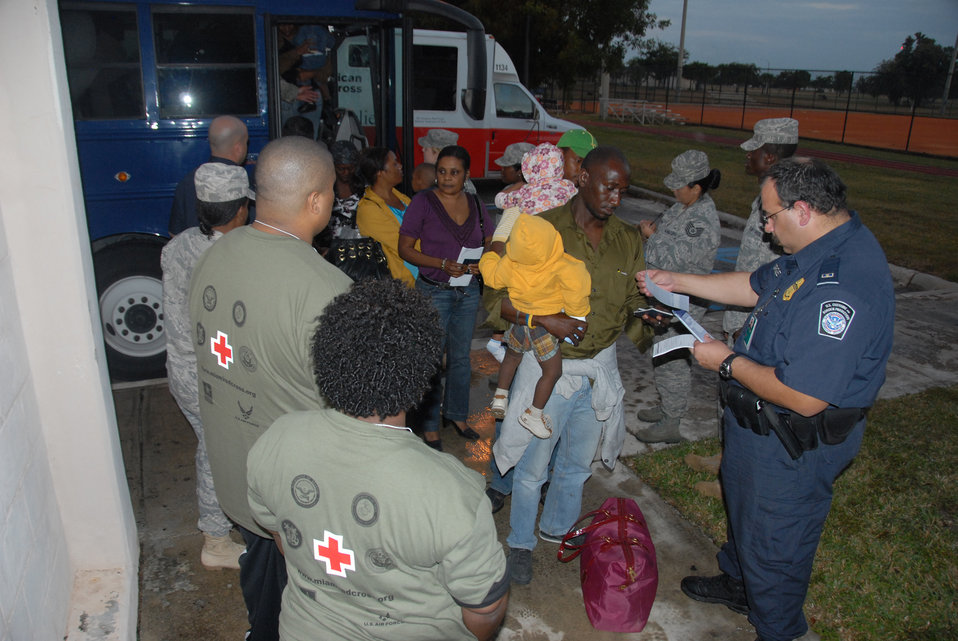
Haiti relief

Evacuees from Haiti begin evacuation in-processing at Homestead Air Reserve Base, Fla., Jan. 20,2010. Upon arriving by aircraft, they are bussed to the base fitness center for in-processing.